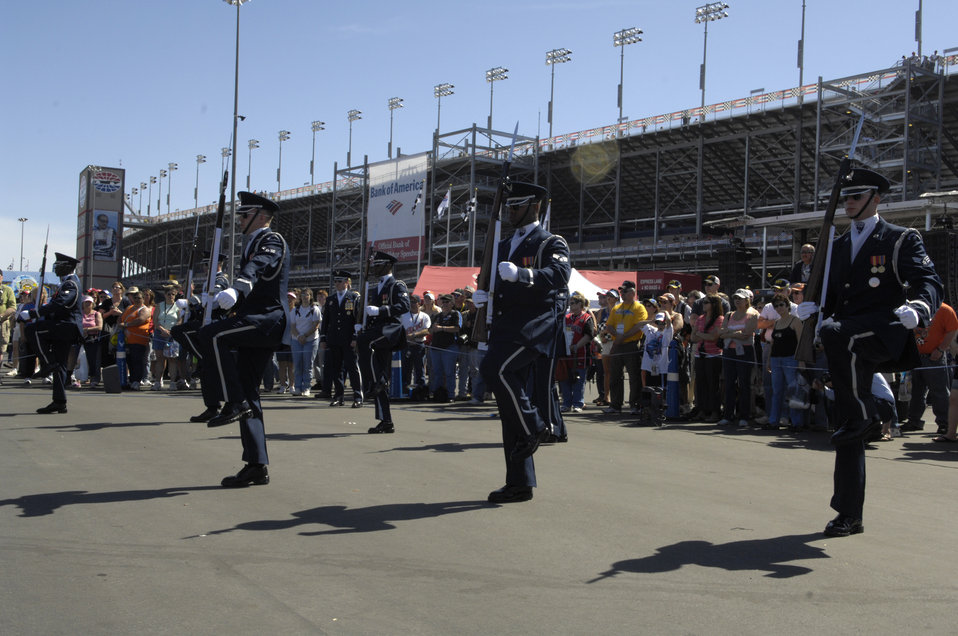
Drill Team performs at Busch Series Race

The United States Air Force Honor Guard Drill Team performs at the Las Vegas Motor Speedway, Las Vegas, Nev., March 10, 2007. The Drill Team is the traveling component of the Air Force Honor Guard and tours Air Force bases world wide showcasing the precision of today's Air Force to recruit, retain, and inspire Airmen for the Air Force mission.